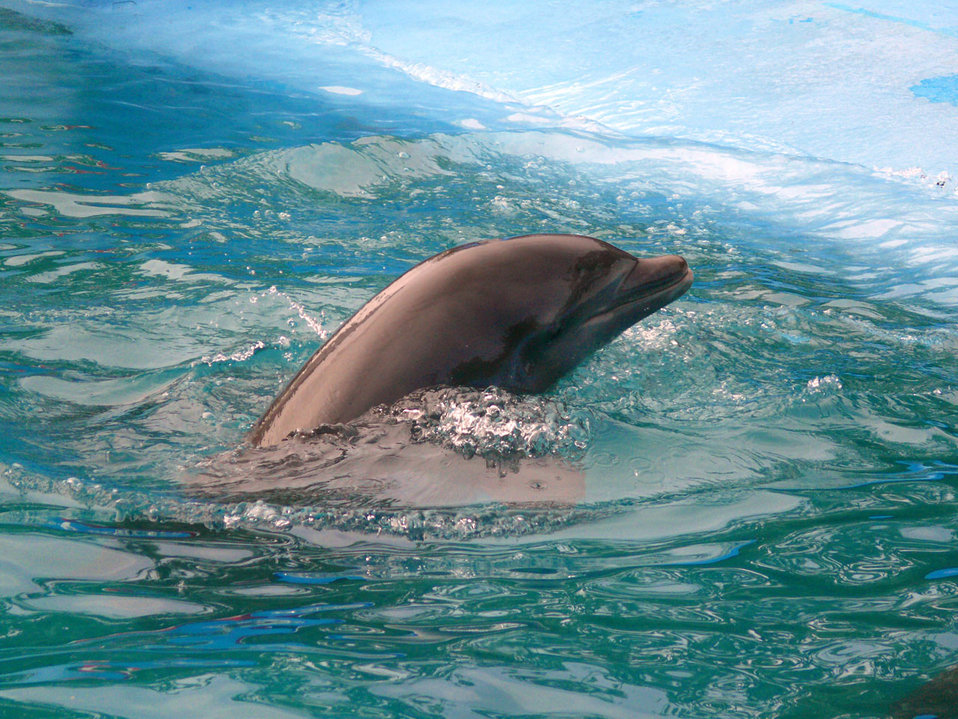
Dolphin in the pool.